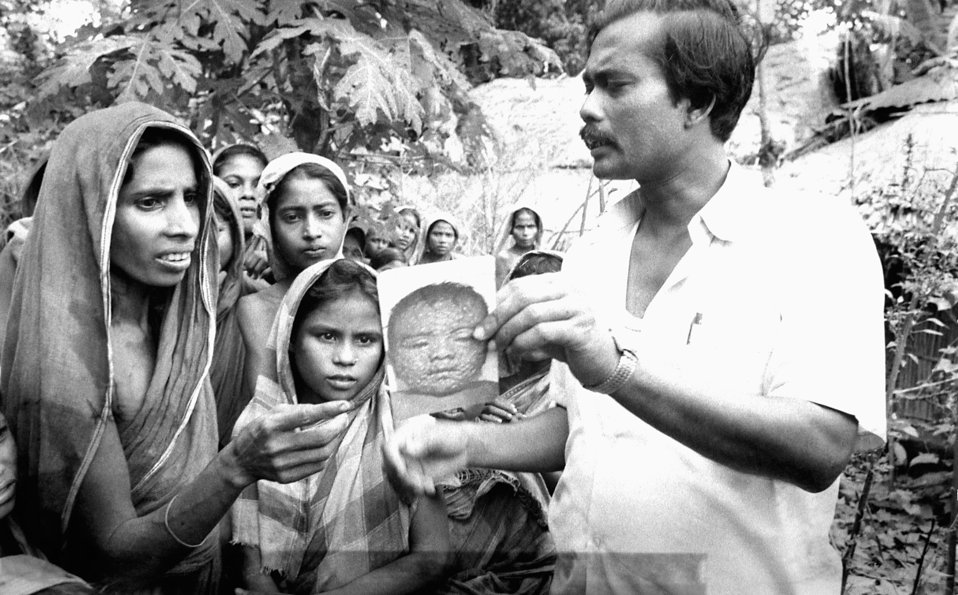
Shahabuddin, a Bangladesh resident, was one of the best Smallpox Surveillance Team leaders involved in the smallpox eradication efforts. He was shown here presenting the 'smallpox card', which depicted an example of the disease, described the reward associated with ones discovery of a smallpox case, and asked if one knew of any such cases. During these country wide searches for smallpox, each one of the 12 million homes had to be visited, in order to show residents the smallpox case photograph, as well as to announce the money reward for anyone reporting a case, and to ask if they had seen or knew of any cases resembling the one pictured.